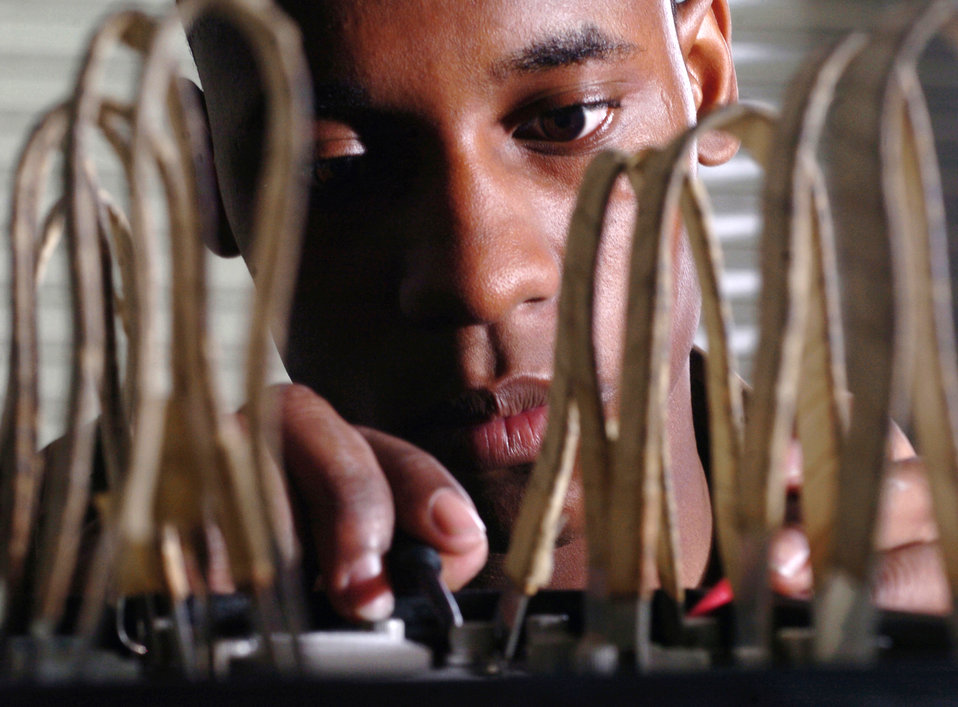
Battery check

YOKOTA AIR BASE, Japan -- Airman 1st Class Chad Bowen inspects a C-17 Globemaster III's batteries for corrosion. He is an electro and environmental technician who maintains cryogenic and compressed gas units. Technicians here repair life raft inflation devices, small gas oxygen cylinders and batteries. Airman Bowen is assigned to the 374th Maintenance Squadron's accessories flight.